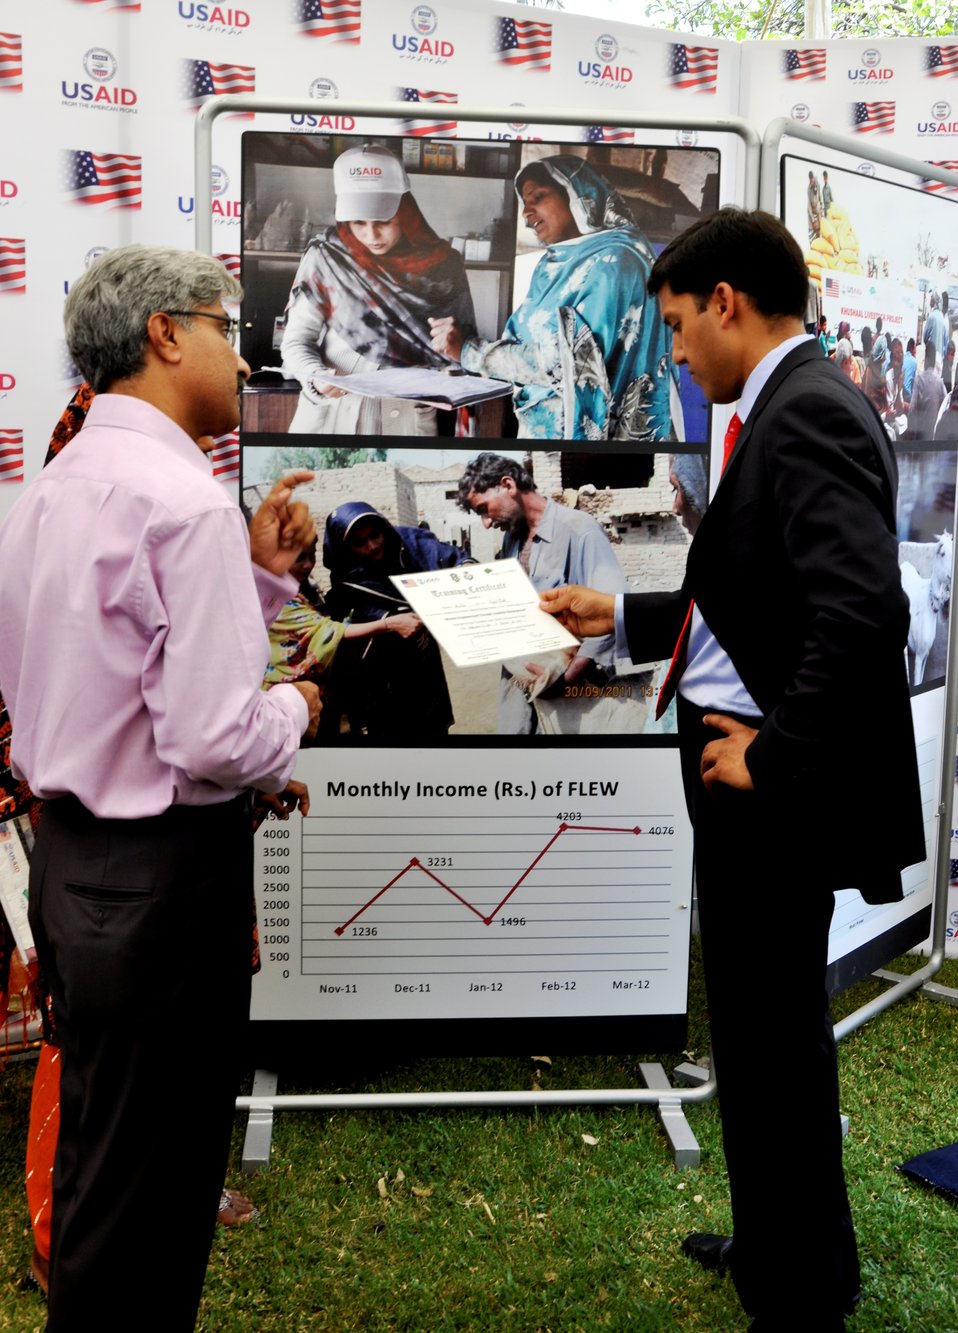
Engro representative briefing Dairy project details to Dr. Shah